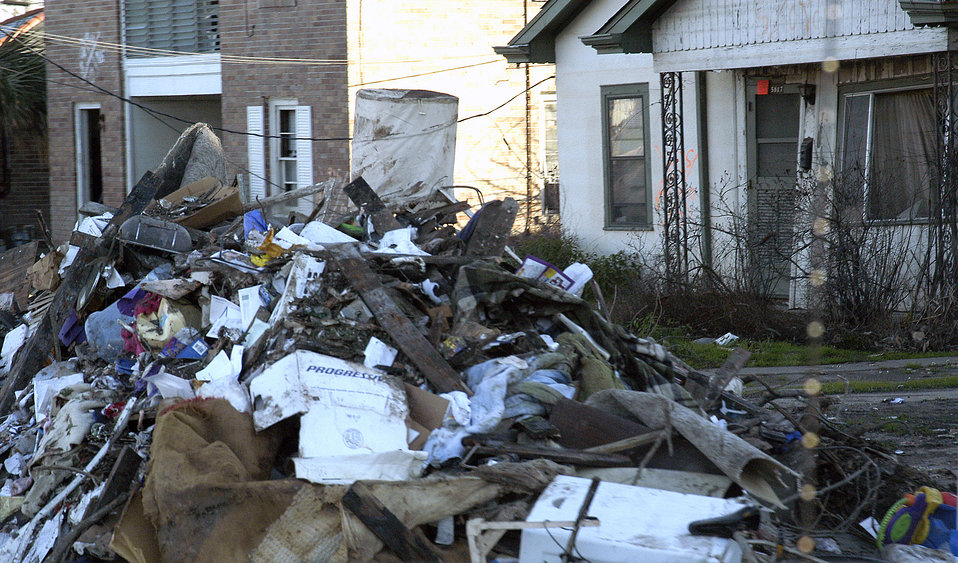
Refuse from flood-damaged homes caused by Hurricane Katrina littered the streets n New Orleans, LA, on February 2006. Hurricane Katrina was the 6th strongest hurricane in U.S. history and the 5th deadliest. Katrina made landfall on Monday morning, August 29, 2005 as a Category 3 hurricane with sustained winds of 125 mph with over a 20-foot storm surge. Katrina caused catastrophic damage over 90 thousand square miles across Louisiana with an estimated $75 billion dollars in damage. The total economic impact to the Gulf Coast was estimated at over $150 billion. 80% of New Orleans, LA, was underwater with some areas more than 20 feet deep. Less than a month later southern Louisiana was struck by a second Category 3 hurricane Rita inflicting more damage in the southwestern areas of Louisiana adding an addition $12 billion worth of damage to the already beleaguered state. The U.S. Army Corps of Engineers (USACE) under the auspices of the Federal Emergency Management Agency (FEMA) was the lead service in providing assistance to the citizens of Louisiana. The U.S. Department of Agriculture (USDA) supplied emergency food aid, emergency loan assistance to farmers and home owners, and USDA personnel from around the nation volunteered their time and muscle to aid in the recovery operations.